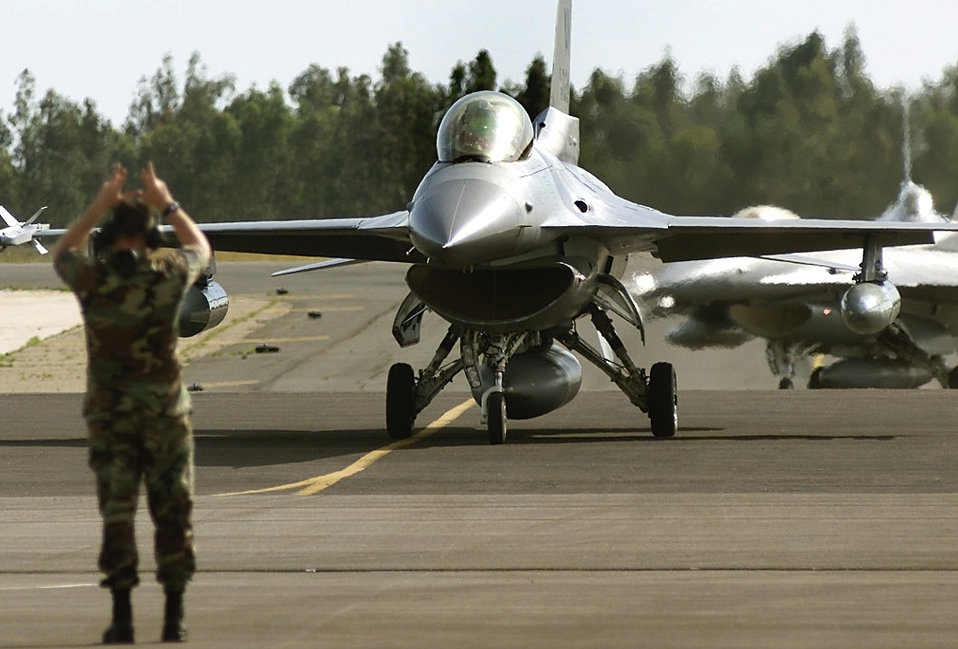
Waiting in line

SIDI SLIMANE AIR BASE -- A crew chief from the 555th Fighter Squadron, Aviano Air Base, Italy, marshals F-16 Fighting Falcons deployed here in support of the African Eagle exercise. African Eagle is a bi-annual exercise designed to practice dissimilar air to air training with the Royal Moroccan air force.